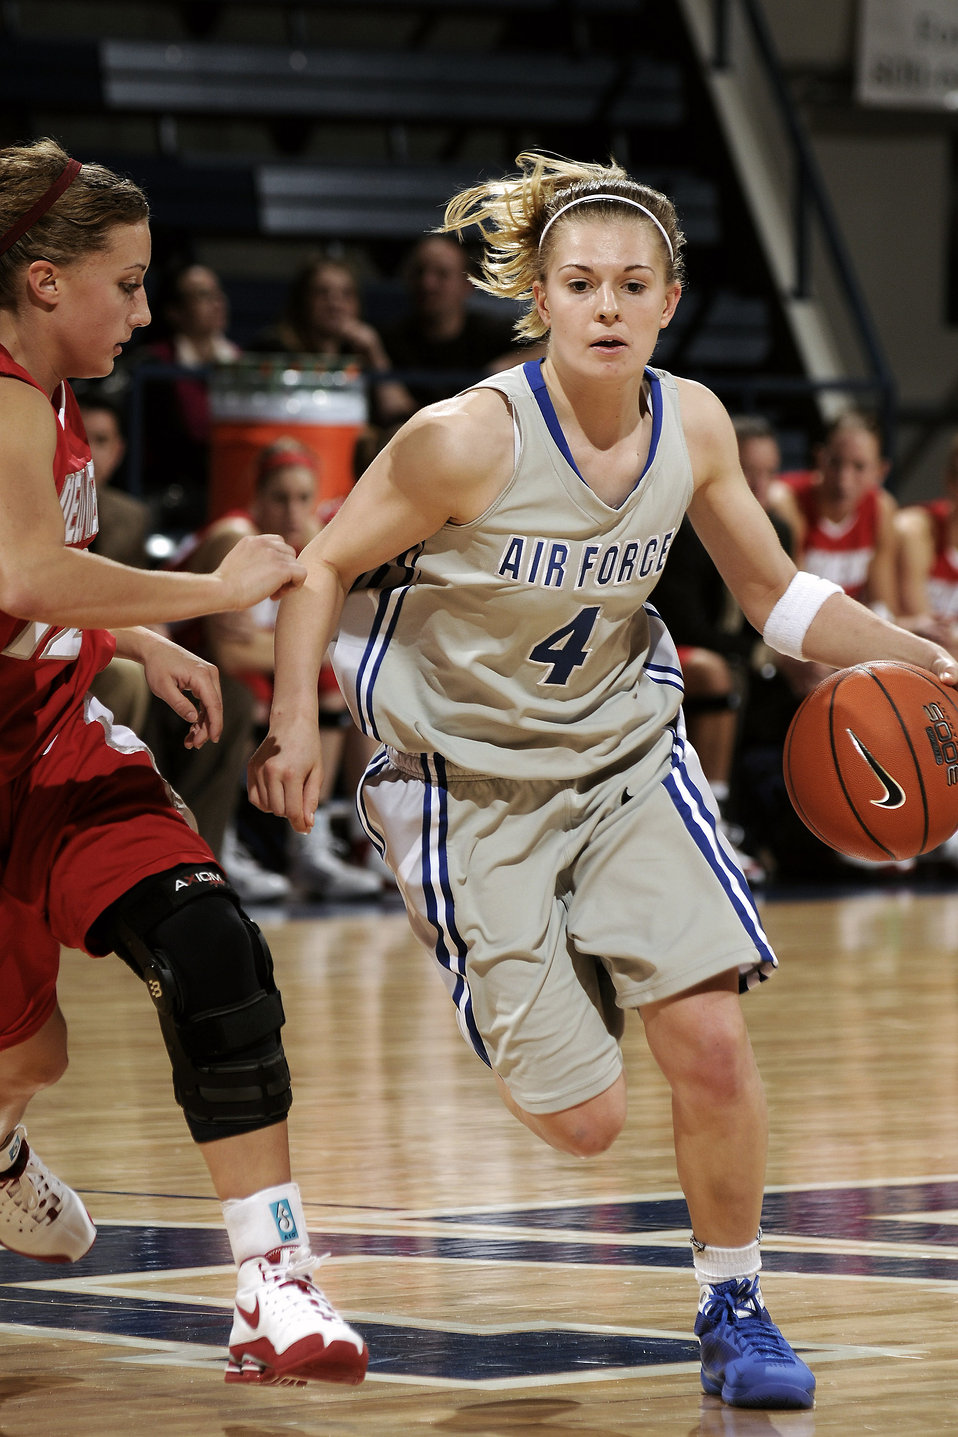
Aiming high

U.S. Air Force Academy freshman guard Anna Gault pushes the ball up court during the 73-39 loss against the New Mexico Lobos Jan. 9 at the Academy in Colorado. The Falcons return to action Jan. 14 at Utah.